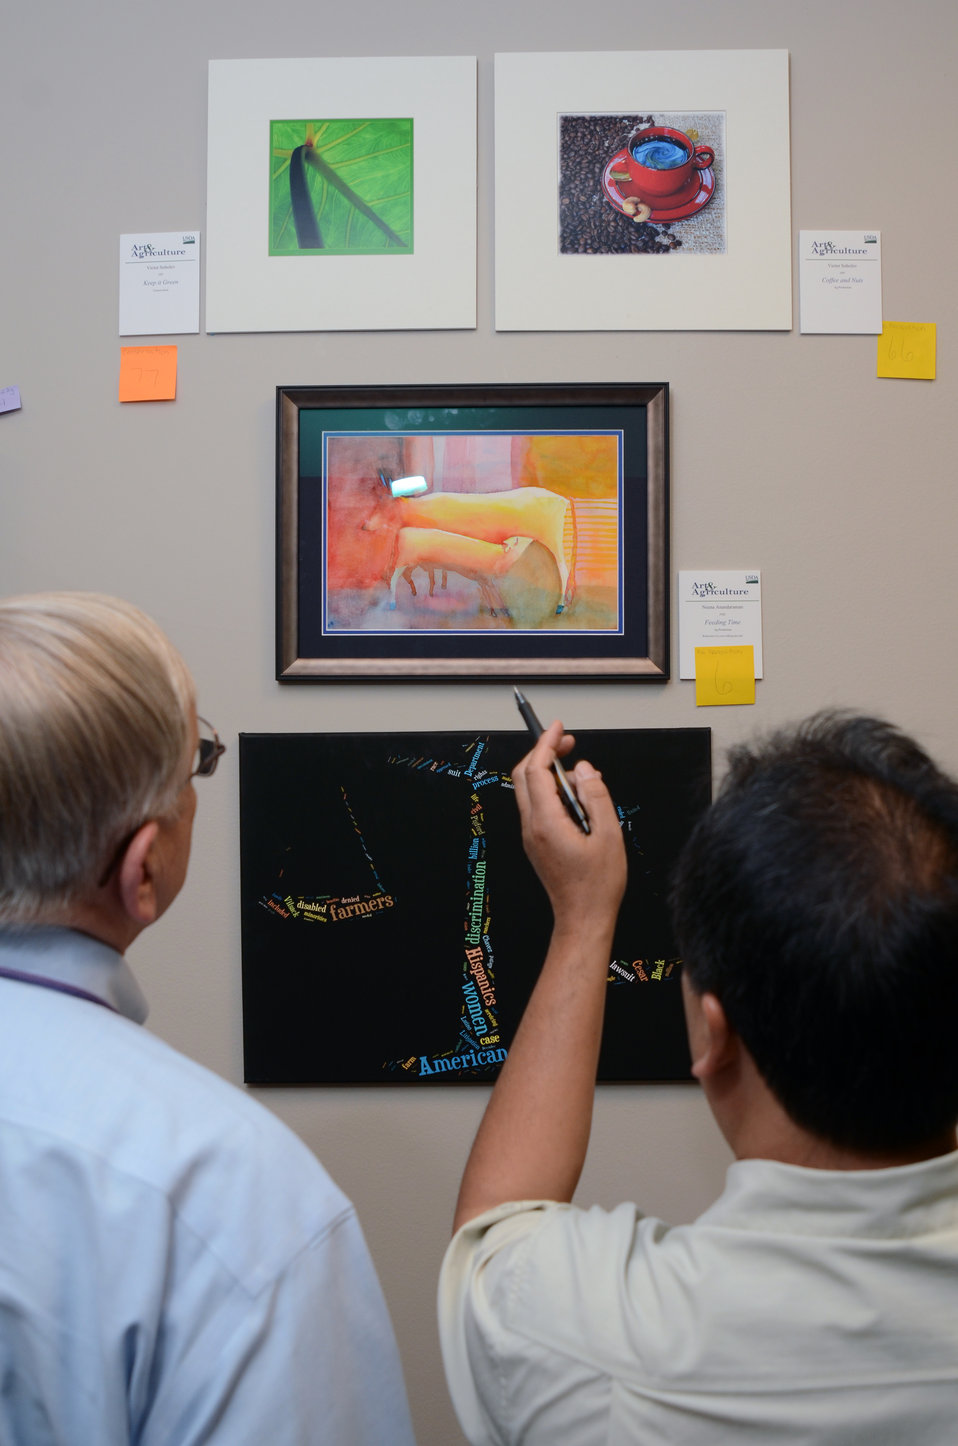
Johnny Bivera, Executive Director and Producer at Visual Media One judges the photography portion of the Art and Agriculture competition in the South Building at the U.S. Department of Agriculture (USDA), Washington D.C. Thursday, May 10, 2012.